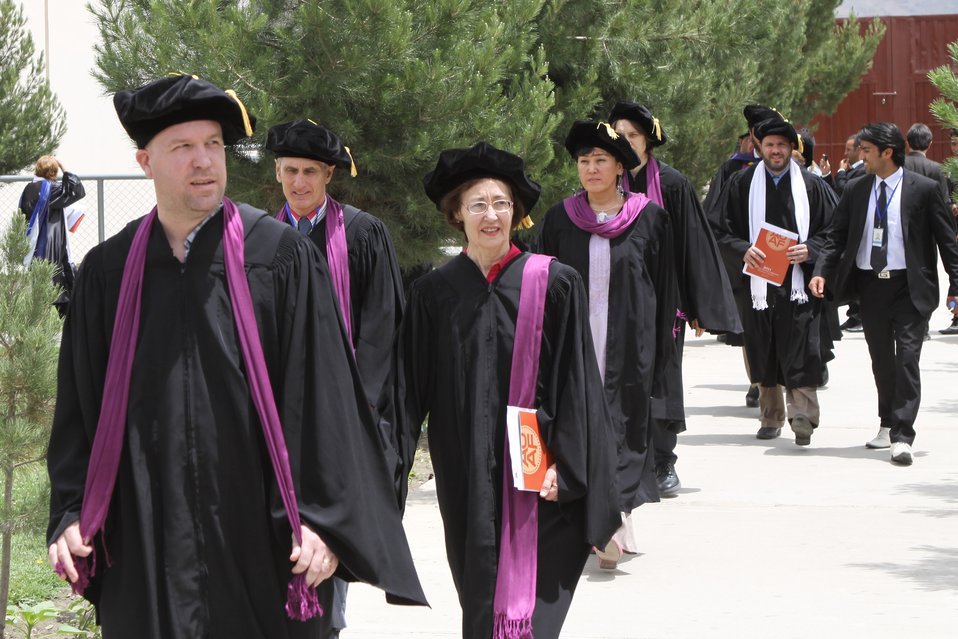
100526 AUAF Graduation 334